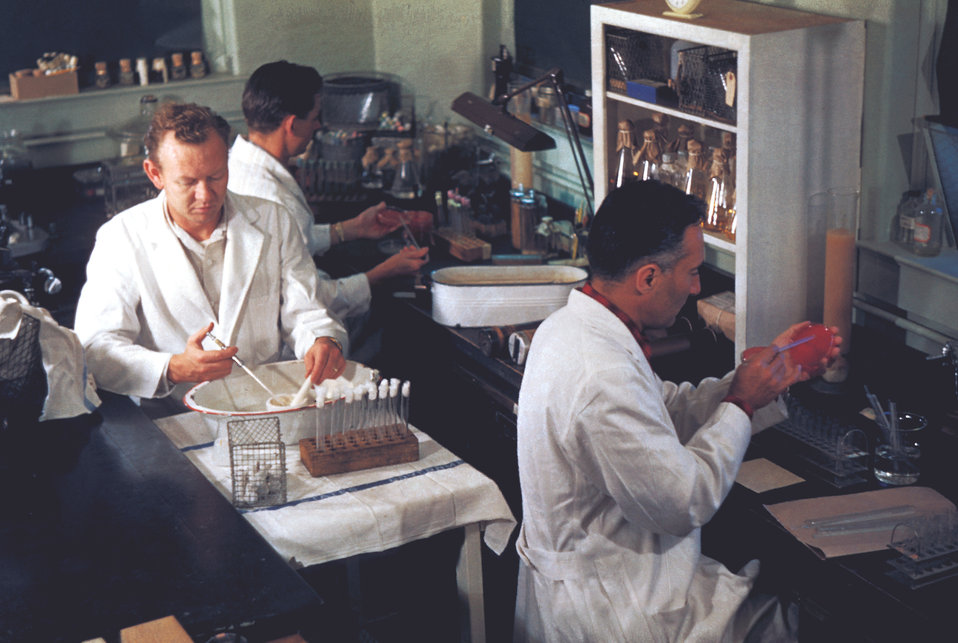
Bacteriology lab technicians participating in plague studies, 1965.